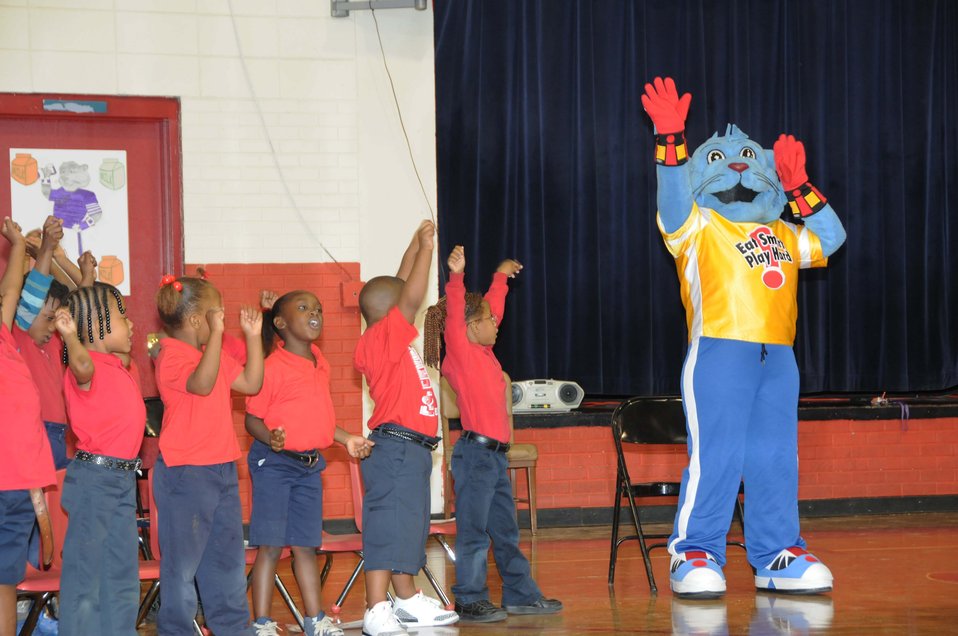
pp5

Students at F.S. Ervin Elementary School in Pine Hill, Ala., do Power Panther moves to celebrate their school’s HealthierUS School Challenge Gold Award of Distinction